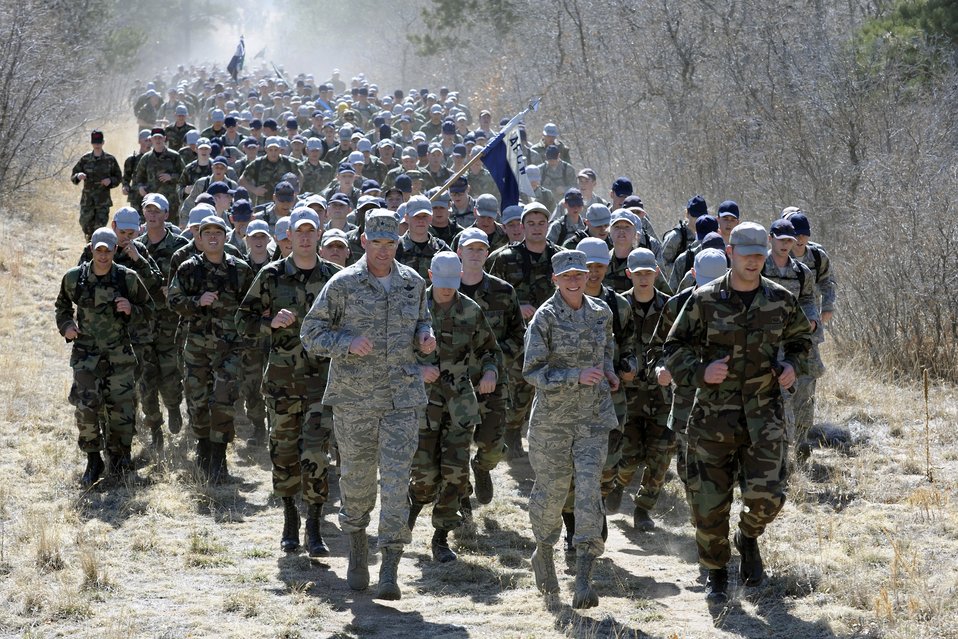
US Air Force Academy, CO

Dean of Faculty Brig. Gen. Dana Born, and Commandant of Cadets Brig. Gen. Samuel Cox,, leads the cadet wing on the Run to the Rock, which is a formation run from the Cadet Area to Cathedral Rock during Recognition. Fourth-class cadets were then required to locate their squadron